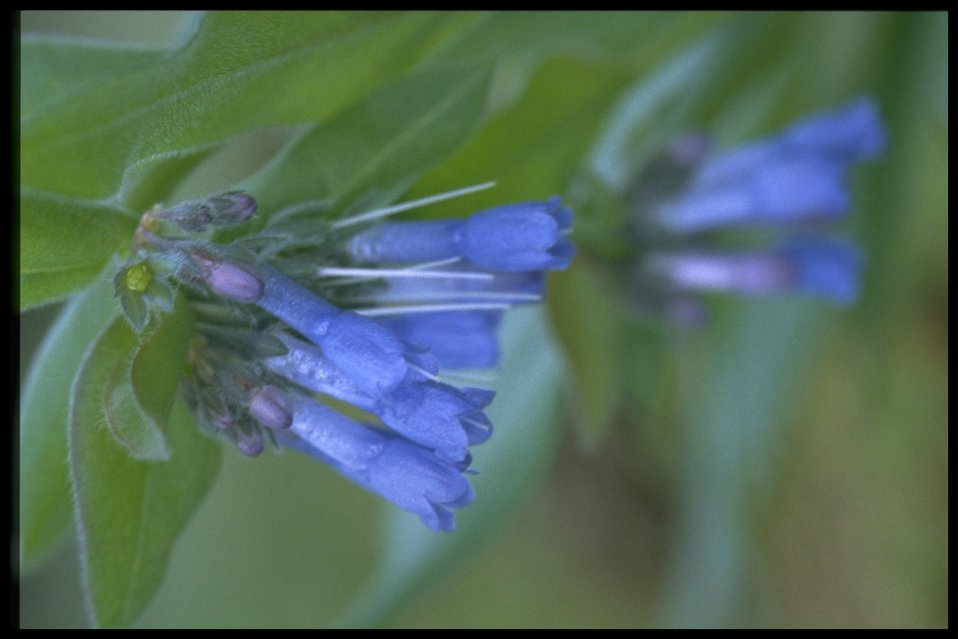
Closeup shot of small bluebells (Mertensia longiflora).